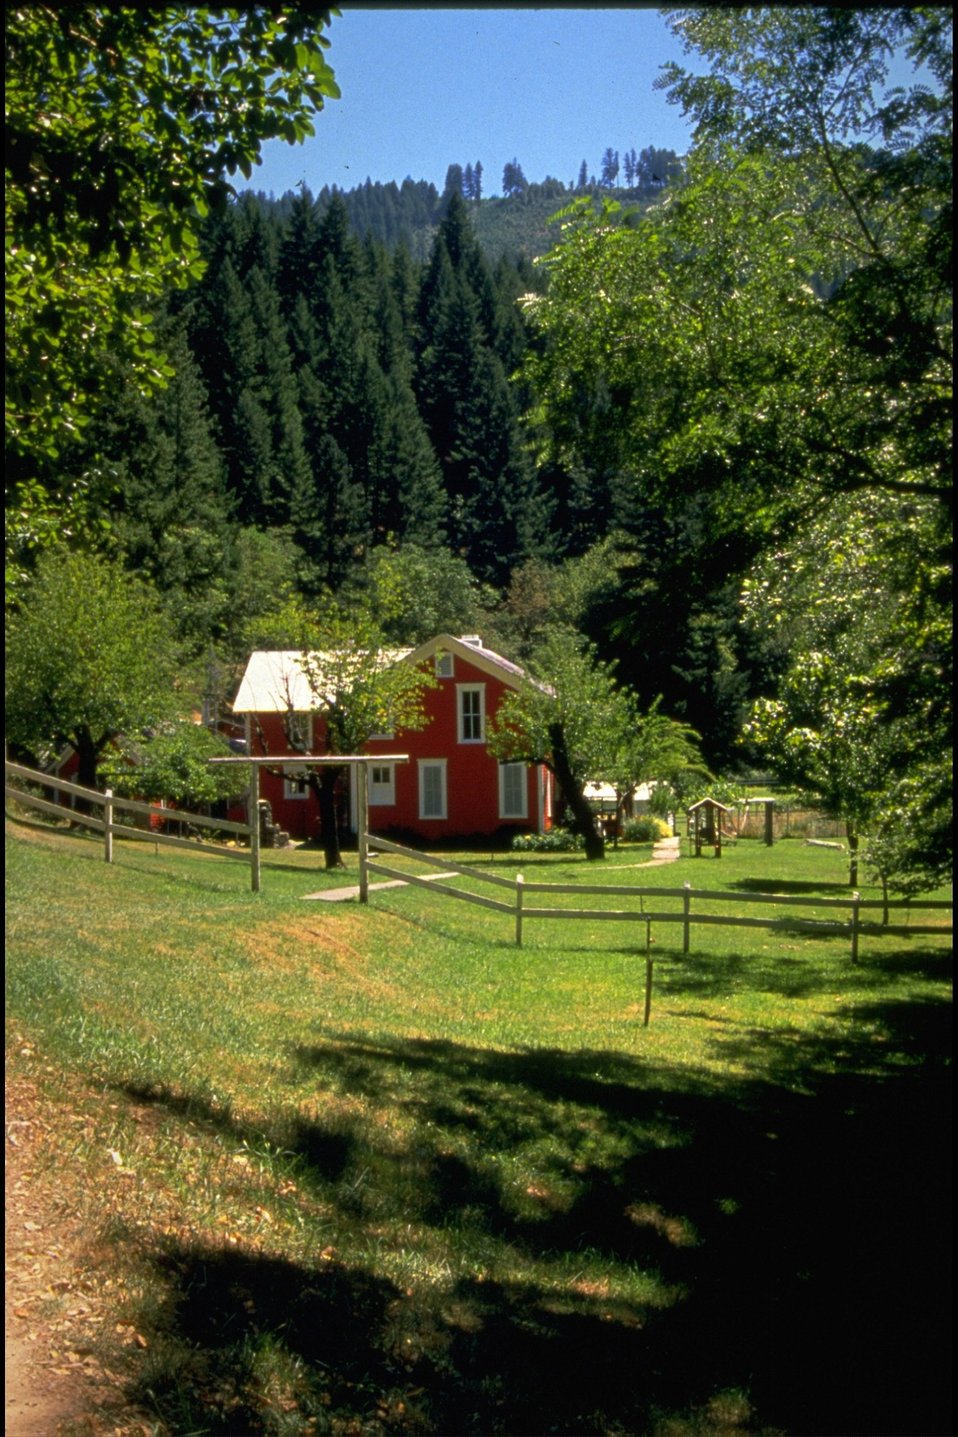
Rogue River Ranch. Main House, West side.